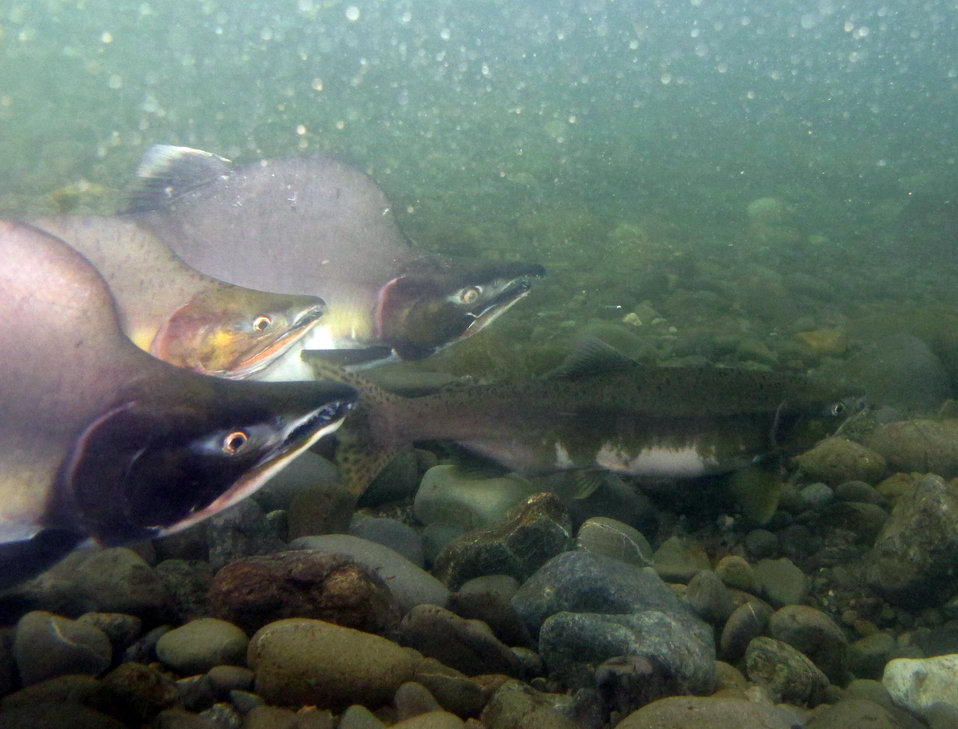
three's company

Three male pink salmon pursue a female up Ship Creek in Anchorage. USFWS/Katrina Mueller